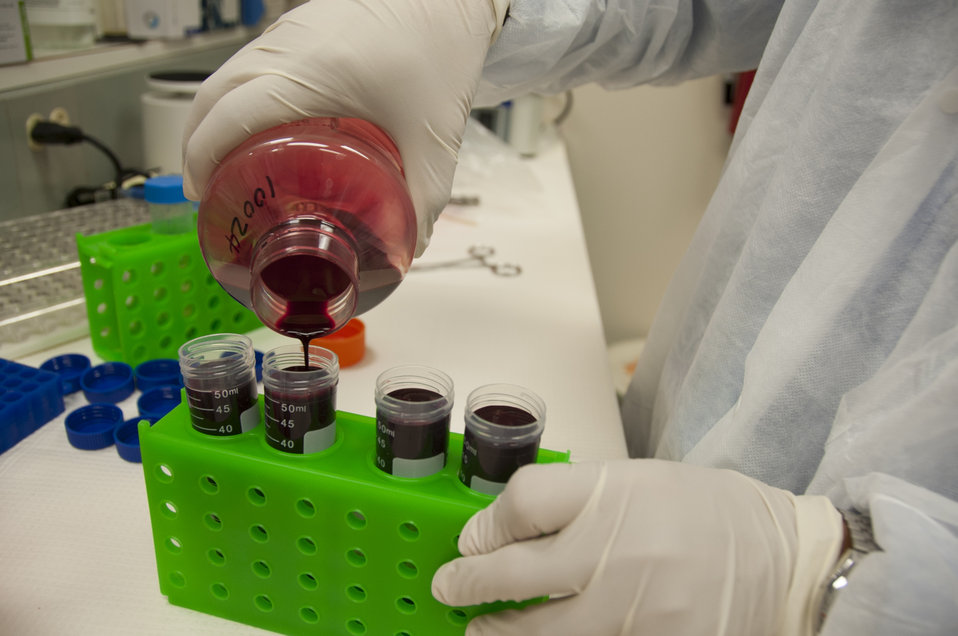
Blood Research: Saving Lives (8407)

Jason Liu, Ph.D., a laboratory chief at FDA’s Office of Blood Research and Review, transfers blood to a 50 ml tube for further processing. FDA is responsible for the safety of our nation’s blood supply and is at the forefront of evaluating and encouraging innovative technologies for protecting it.

Read this Consumer Update to learn more: Advances in Saving Lives with Blood